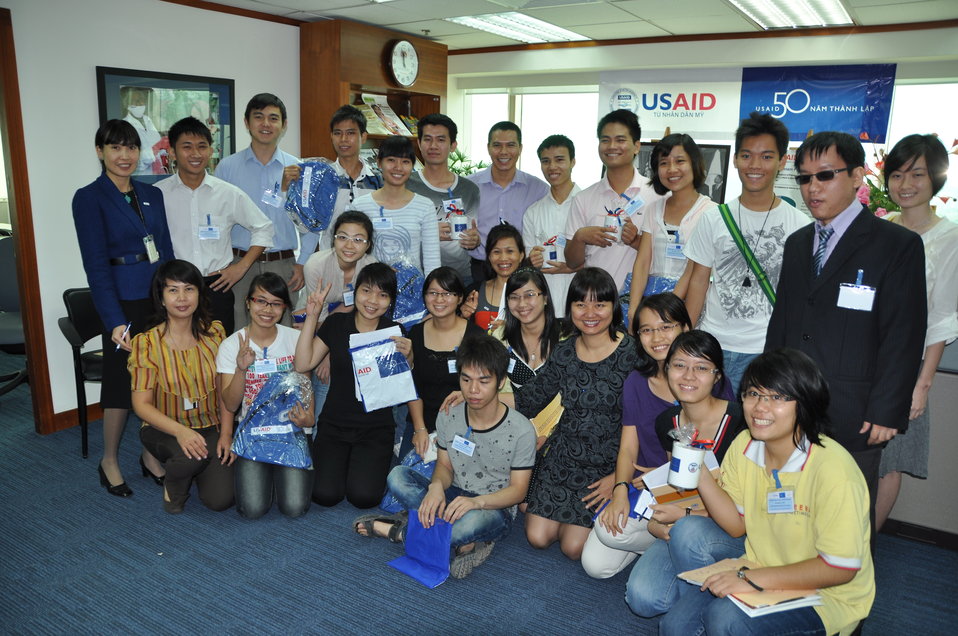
USAID Vietnam Open House, November 3, 2011